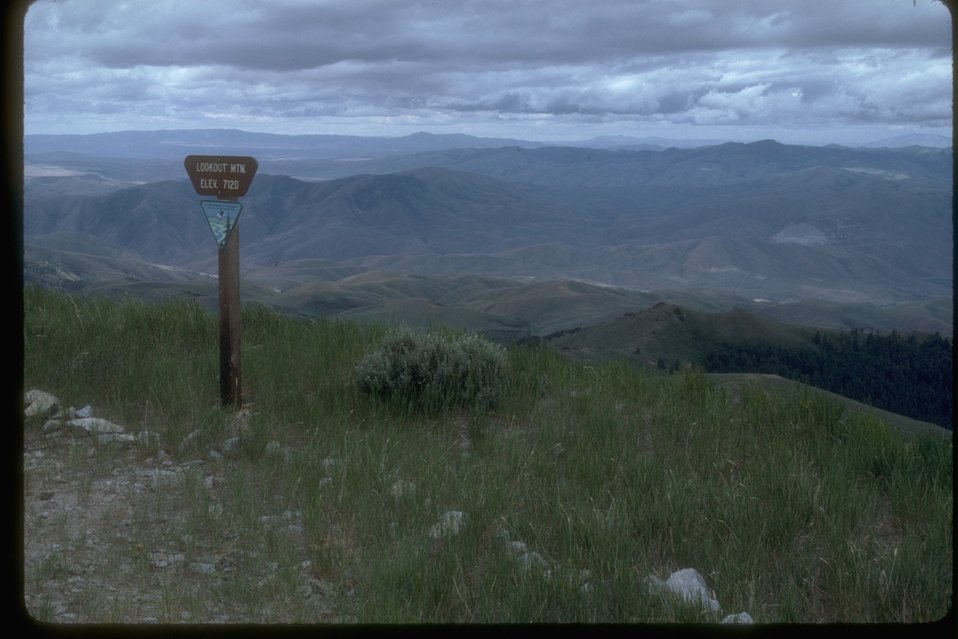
View from Lookout Mountain. Sign Reads: "Lookout Mountain, Elevation 7120'.